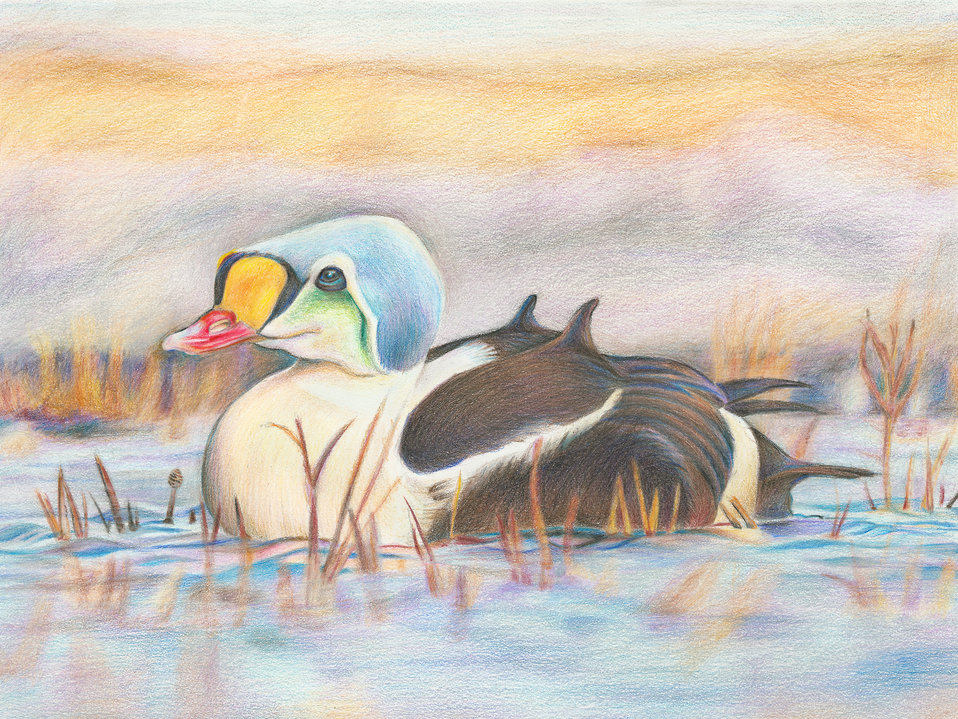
Massachusetts

2012 Jr Duck Stamp Program
State Best of Show
Massachusetts